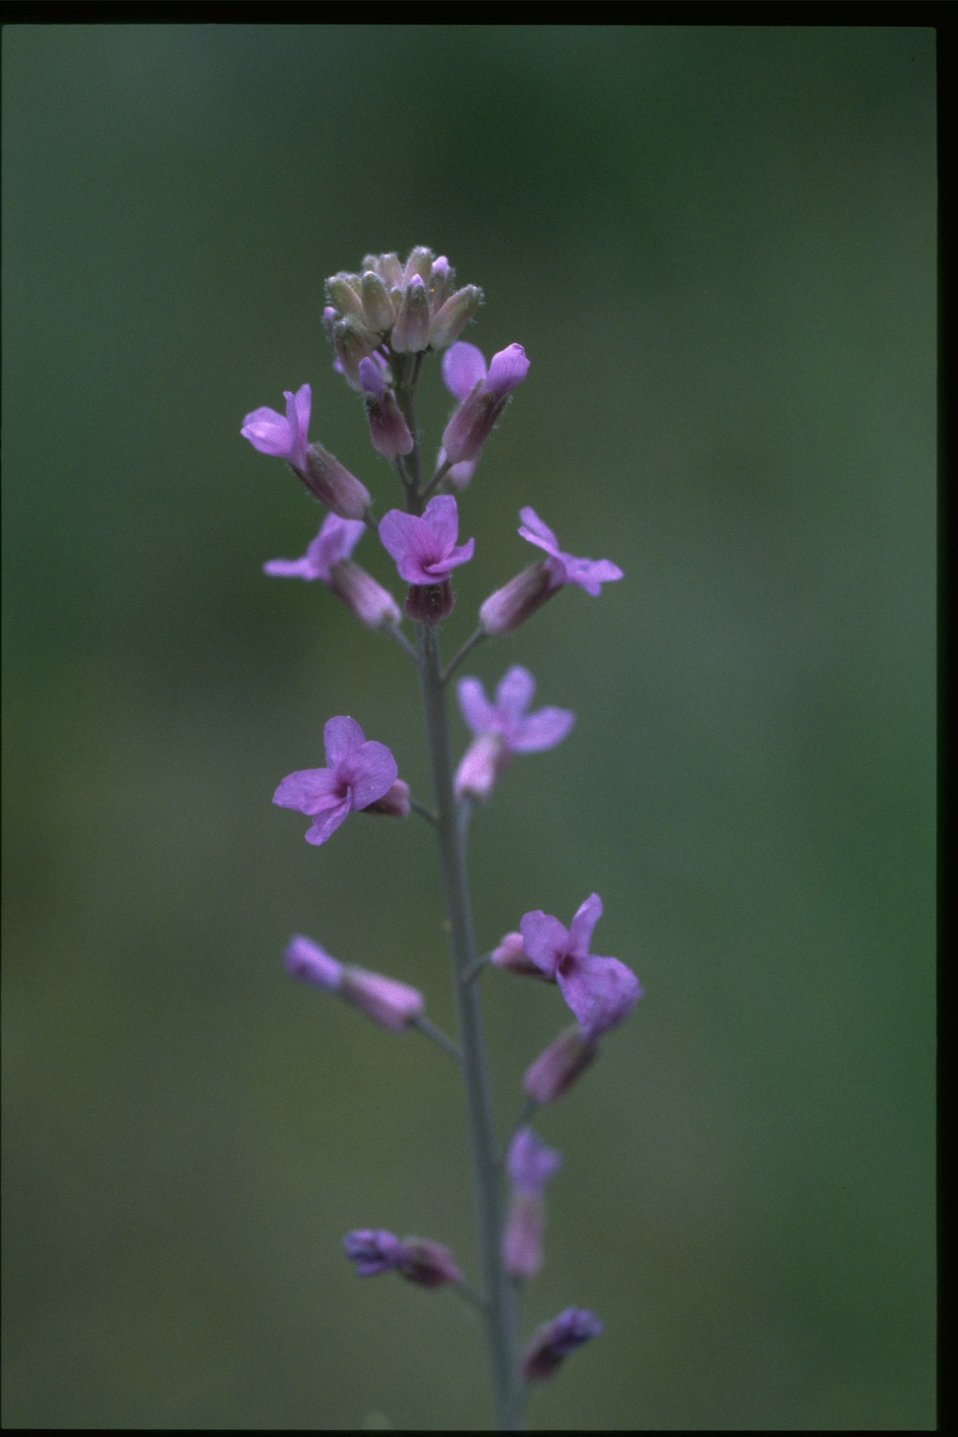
Closeup shot of Penstemon wildflower.